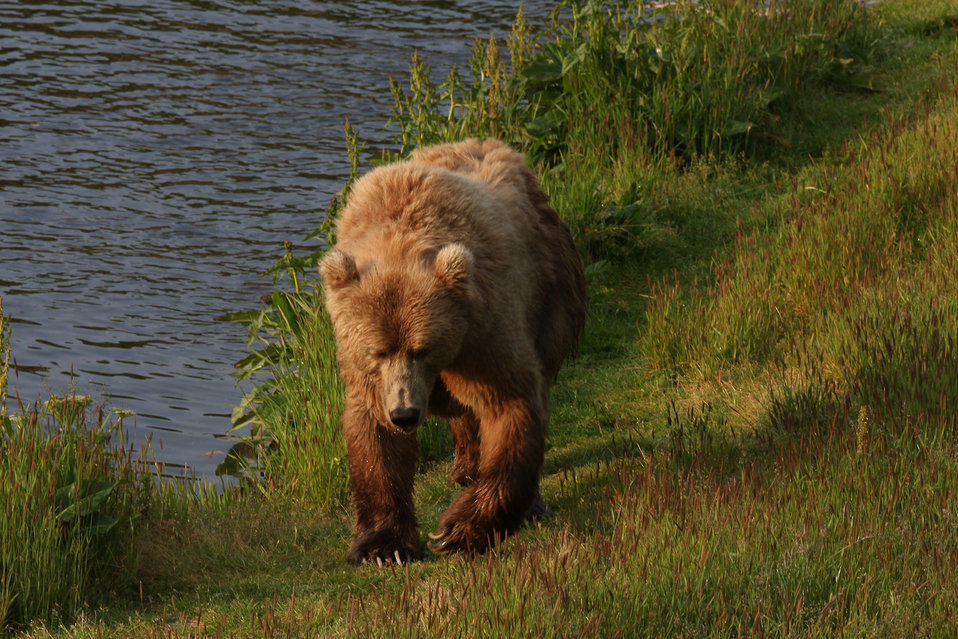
Sow at Dog Salmon River 2

Kodiak brown bear.
Lisa Hupp/USFWS